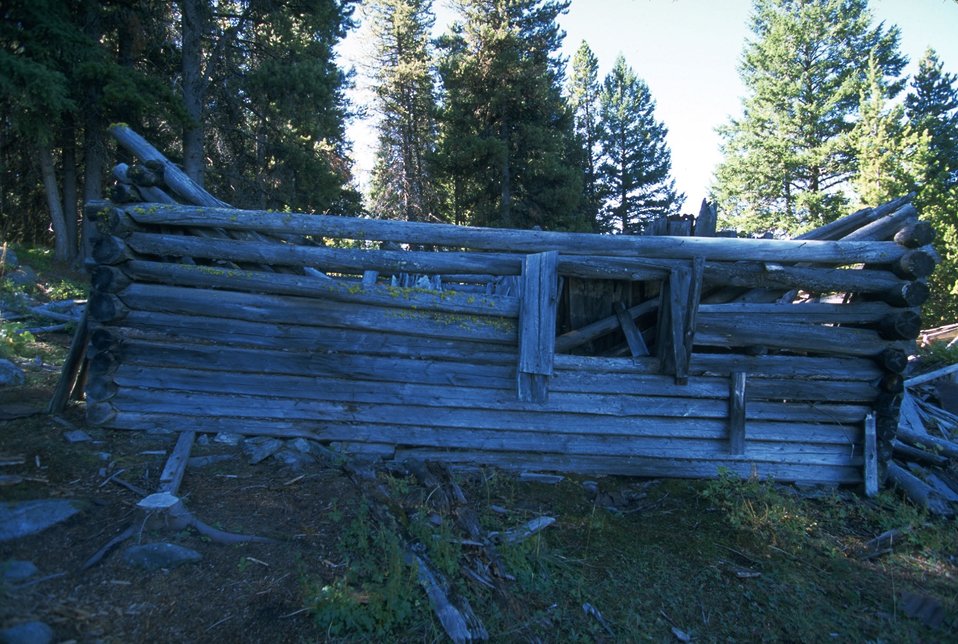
Coloma Ghost Town-collapsed cabin